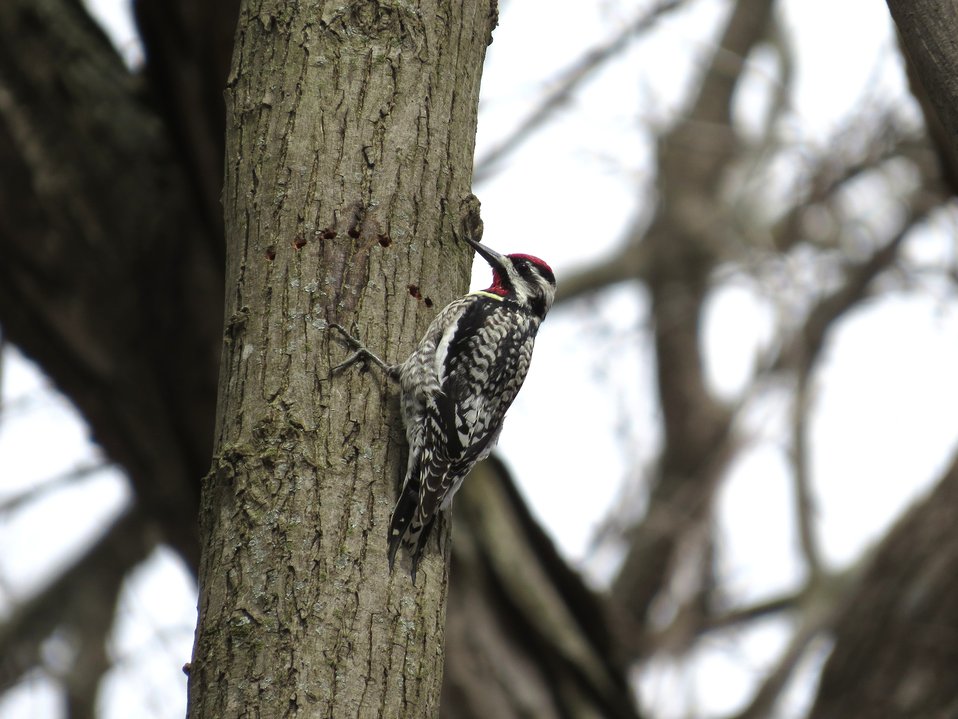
Yellow-bellied Sapsucker